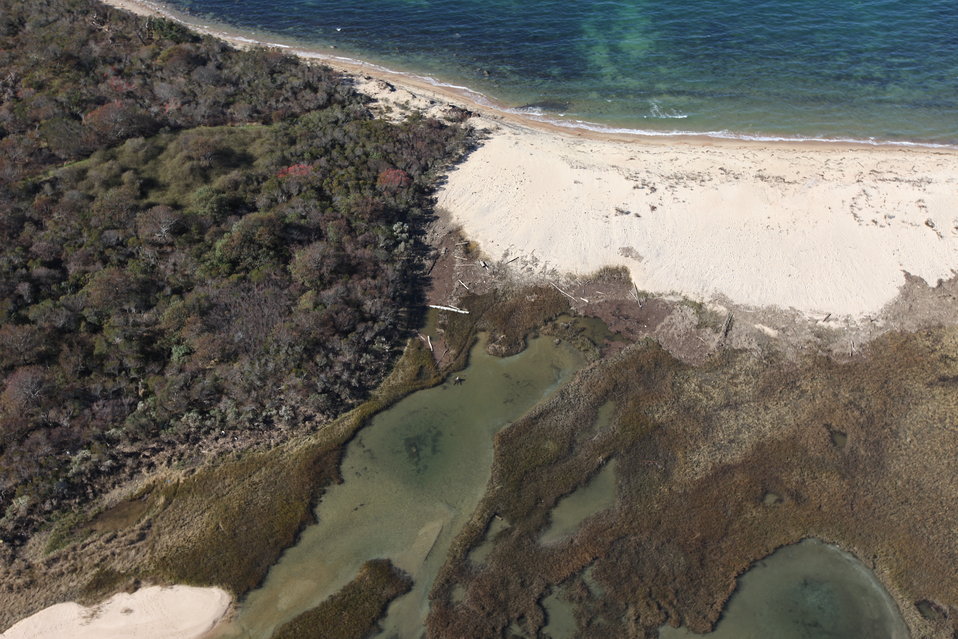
Aerial view of damage at Block Island National Wildlife Refuge

Debris and vegetation damage at Block Island National Wildlife Refuge.